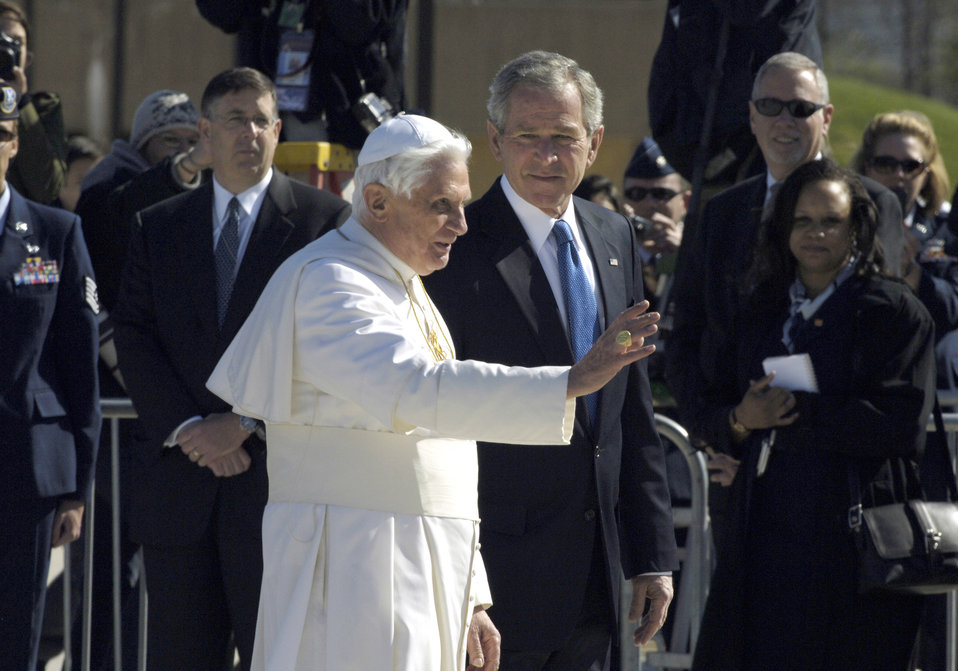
Pope arrives at Andrews

Pope Benedict XVI waves to the crowd upon his arrival as he is escorted by President George W. Bush April 15 at Andrews Air Force Base, Md. The pope is visiting the United States for a week and will meet with President Bush at the White House, address the presidents of Roman Catholic colleges and universities, and celebrate Mass at Nationals Park in Washington, D.C., and Yankee Stadium in New York City. The pontiff was selected as the 265th pope on April 19, 2005.